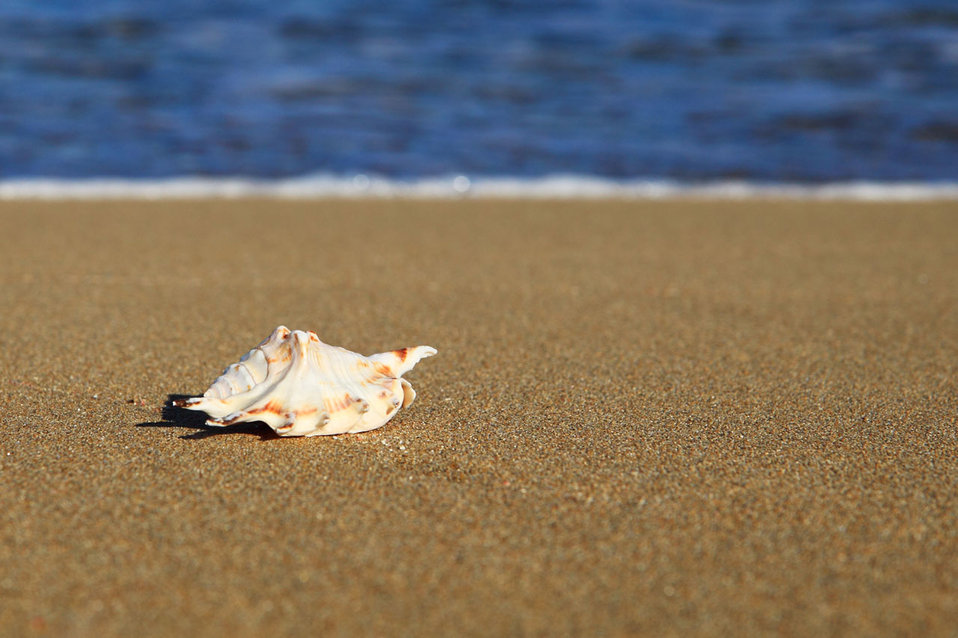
Sea shell on beach

Sea shell in sand with ocean on background.